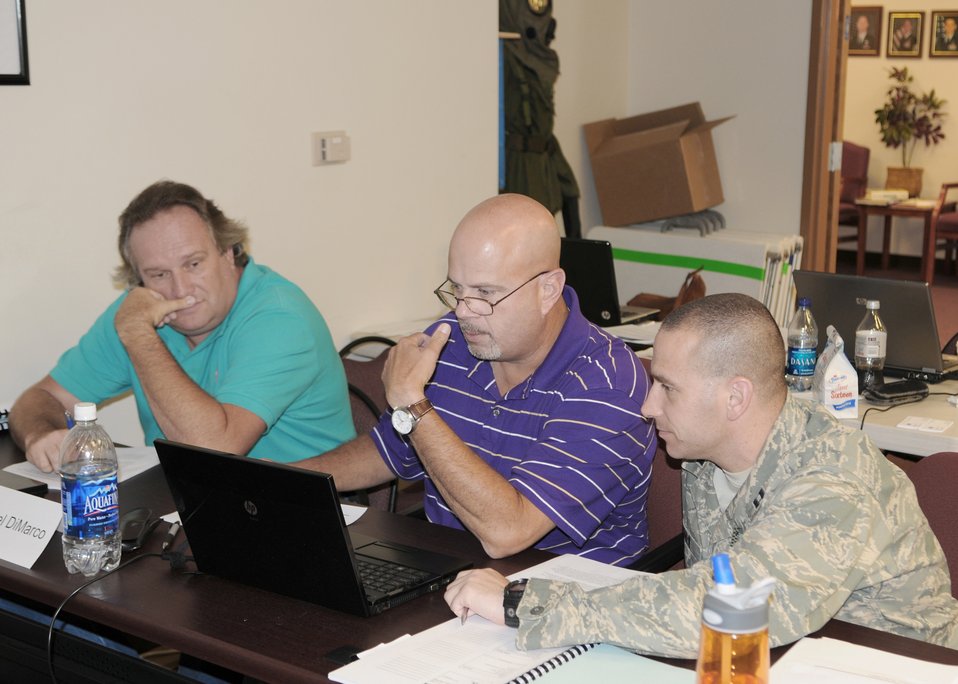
Integrated defense software

Students attending the Integrated Defense Risk Management Process and ForcePRO workshop July 30, 2010, at Moody Air Force Base, Ga., work together in teams to accomplish classroom exercises. The training is designed to teach students risk management principles through a new software program.